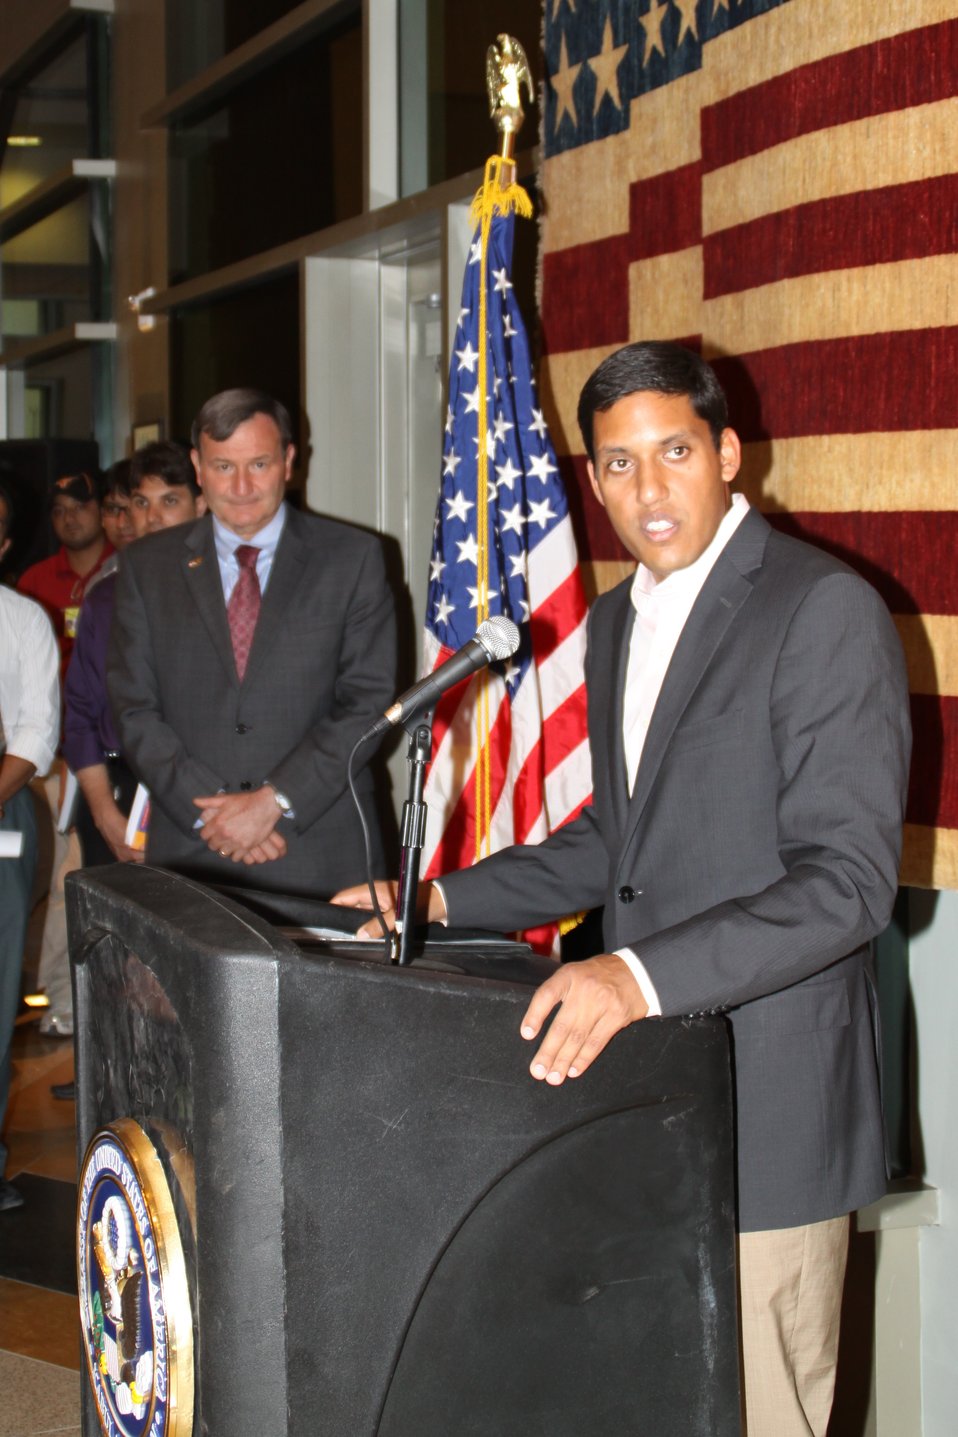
US Embassy Town Hall July 21, 2010

Dr. Rajiv Shah answers questions at a Town Hall meeting as Ambassador Eikenberry looks on.